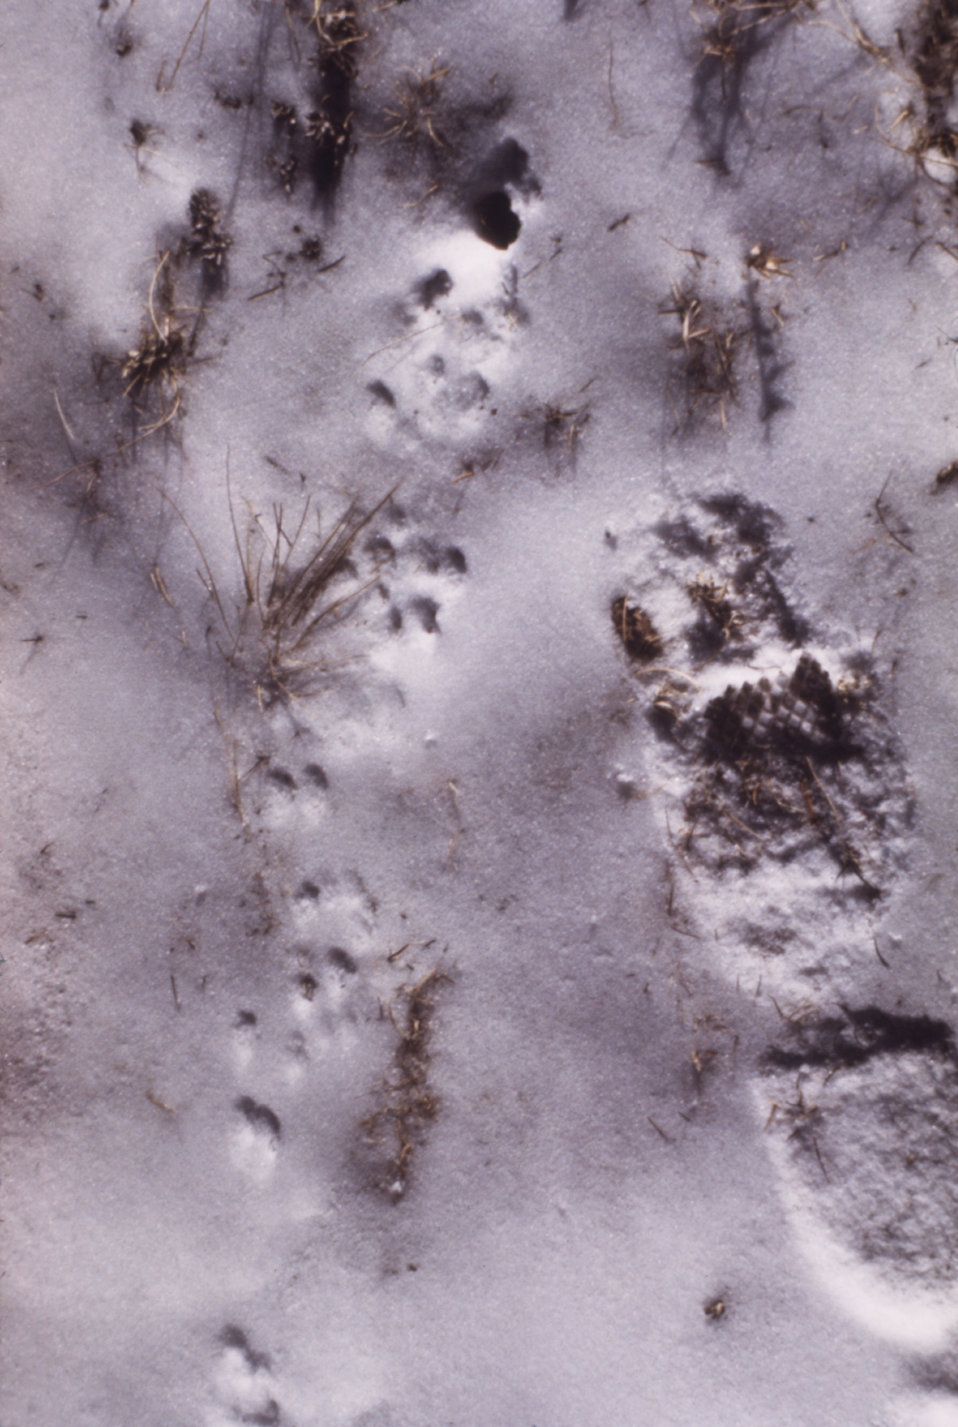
These tracks were made by a deer mouse, P. maniculatus, the major carrier of Sin Nombre virus in Estes Park, Colo.